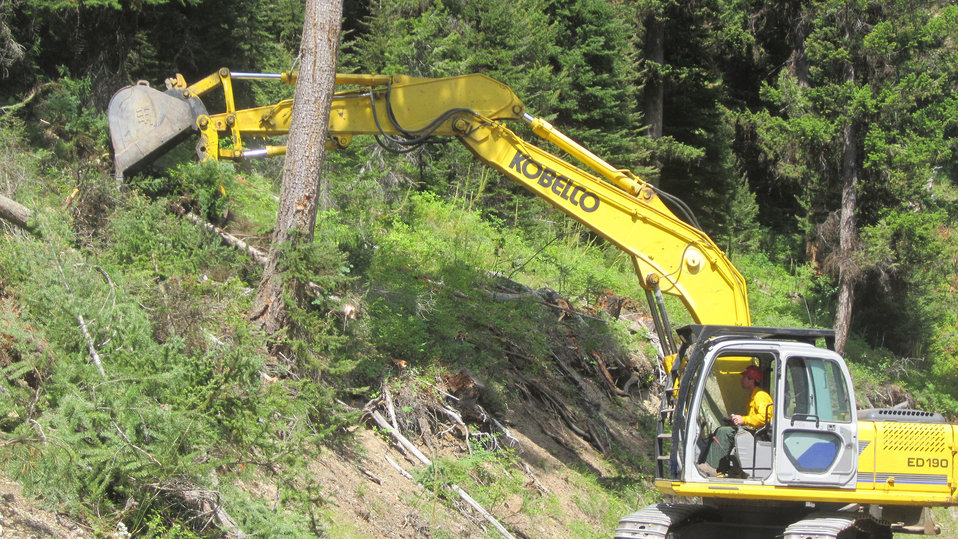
Excavator clears understory vegetation as part of a fuel break for a contingency fire line construction along Forest Road No. 1303 at the Gold Pan Fire in the Bitterroot National Forest. The Gold Pan Fire in the Bitterroot National Forest near Conner, MT began by lightning on Jul. 16, 2013 by lighting have consumed approximately 16,330 acres.